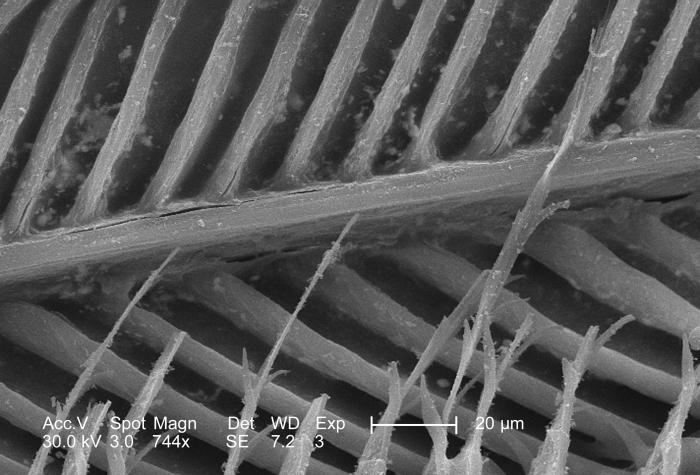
This scanning electron micrograph (SEM), at a moderately high magnification of 744x, depicted the strut-like configuration of an unidentified bird feather found on the ground in the Decatur, Georgia suburbs.